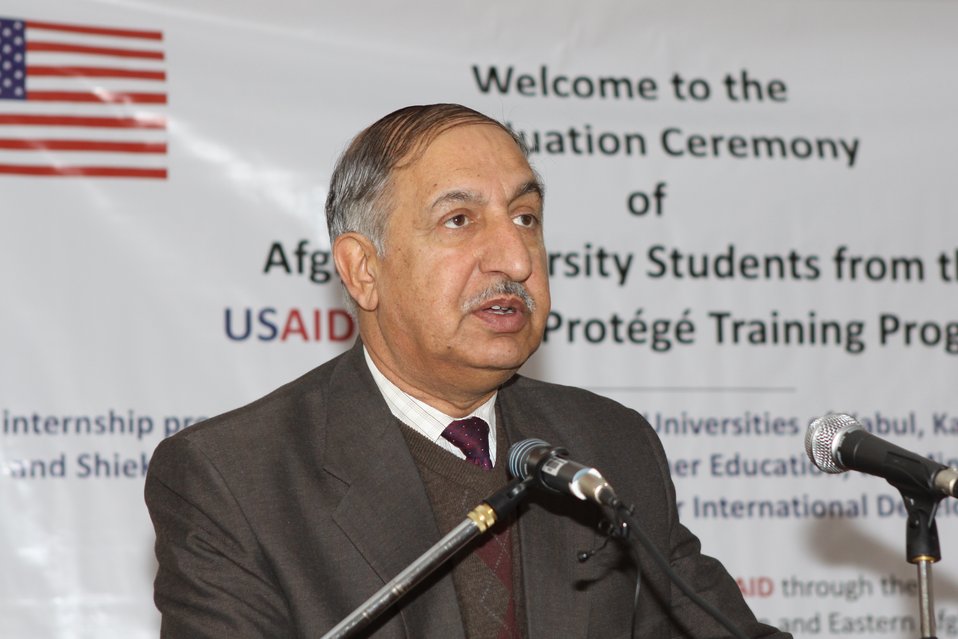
Female University Students Complete Internship

Kabul, Afghanistan | March 16, 2011 – In response to a demand for qualified Afghan engineers, Kabul University celebrated completion of an intensive five-month Mentor Protégé Training Program today by 10 female fourth year university students. The Training Program is a joint effort between the Government of the Islamic Republic of Afghanistan, the U.S. Agency for International Development (USAID), and the Universities of Kabul, Kandahar, Alberoony in Kapisa, Shiekh Zayed in Khost. The graduation ceremony highlighted collaboration with these national institutions in building the technical skills of young Afghans, made possible by USAID.

Four of the interns are engineers, while the remaining six are from the faculties of computer science, economics, and psychology.

Speaking about the event, H.E. Minister of Public Works Abdul Qudus Hamidi said, “The future of Afghanistan lies in developing the skills of our youth, and the engineering skills of these graduates today represent a small but important step forward for the country.”

Keynote speakers at the ceremony included H.E. Deputy Minister of Higher Education Abdul Rahim; USAID Senior Deputy Mission Director Robert Hellyer; and Chancellor of Kabul University Professor Hamidullah Amin. Approximately 150 people, including current and former students attended the graduation.

Launched last year, the Mentor Protégé Training Program has provided qualifying students the opportunity to intern with USAID’s Strategic Provincial Roads-South and East Afghanistan project and gain practical experience in a real work environment. The goal of the program was to offer interns the opportunity to gain hands-on experience to reinforce their formal studies. A total of 30 students from four national universities have benefitted from this program.

“The promotion of women’s rights is integrated into the overall U.S. Government development strategy and can be found in key programs, including education, healthcare, security, rule of law, political participation, agriculture, and economic development,” said Robert Hellyer. “The U.S. Government is committed to the Afghan leadership of programs that directly enhance development, particularly as it relates to women’s issues.”

This event also highlighted the learning achievements of students and emphasized the importance of hands-on internship programs. The curriculum is designed to instill students with the knowledge and confidence to qualify for engineering positions upon completion of their fourth year at their respective universities.